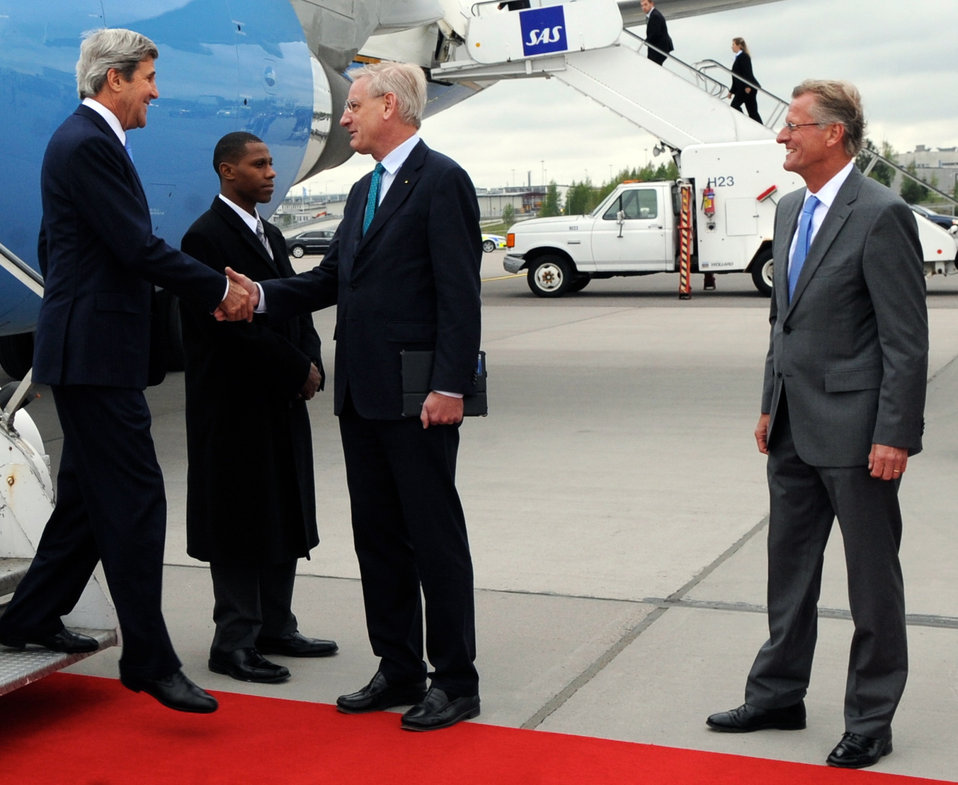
Secretary Kerry Arrives in Stockholm, Sweden

U.S. Secretary of State John Kerry is greeted by officials as he disembarks from his Air Force jet on May 14, 2013, after arriving in Stockholm, Sweden, for meetings with Swedish officials.